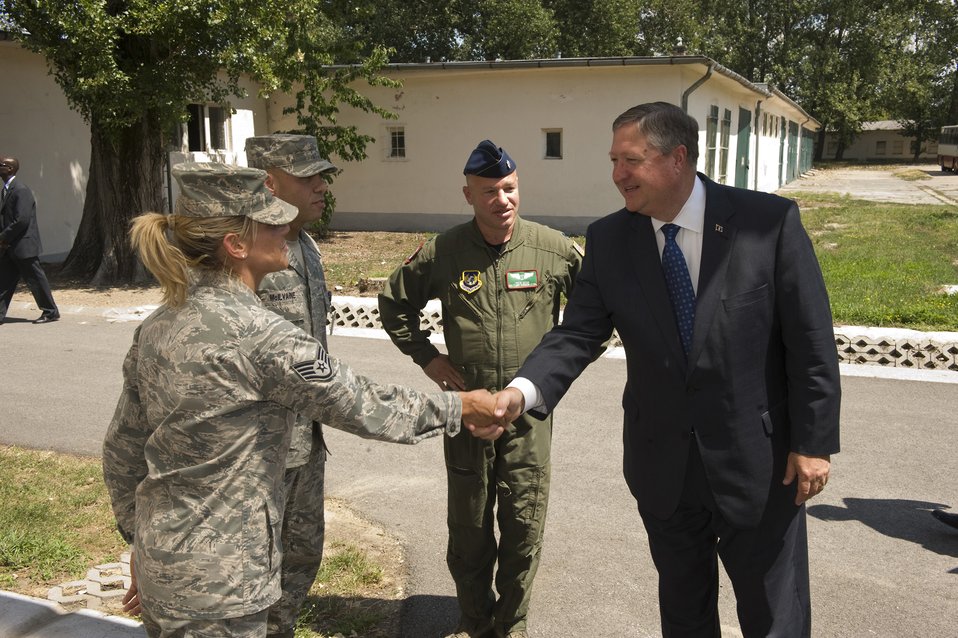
SecAF greets Airmen

Secretary of the Air Force Michael Donley meets Staff Sgt. Theiesa Morgan and Tech. Sgt. Jason McIlvaine, both independent duty medical technicians, and Lt. Col. Pete Sipos, HAW Medical Director, during a tour of Pápa Air Base, Hungary, July 11, 2012. The secretary visited the HAW to speak with Airmen about the direction of the Air Force, meet with them on the job and learn what's on their minds.